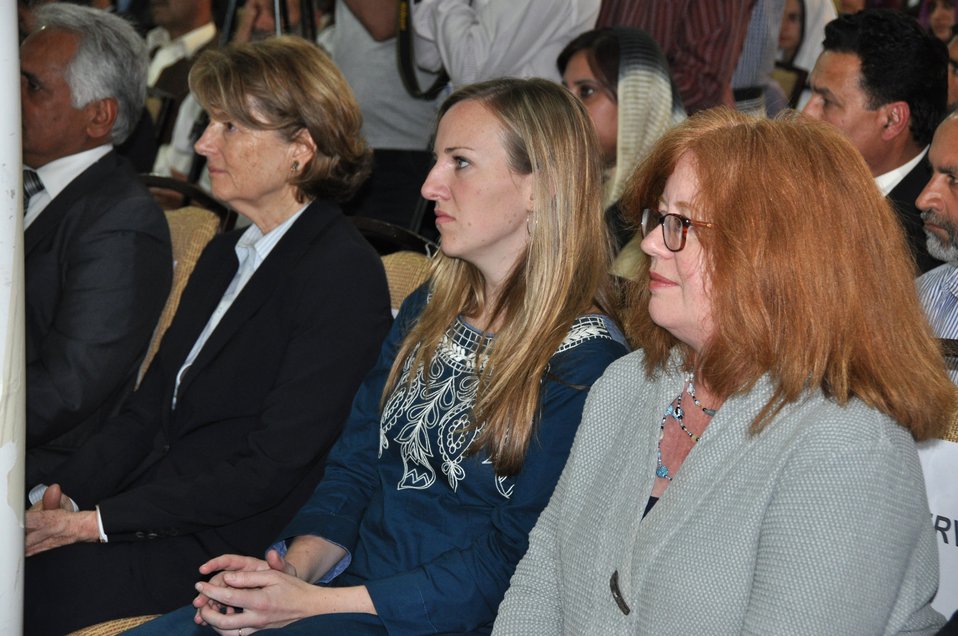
The United States Ambassador to Pakistan, Richard Olson broke ground for a U.S. funded construction of a new Faculty of Education building in Muzaffarabad, AJK. 08